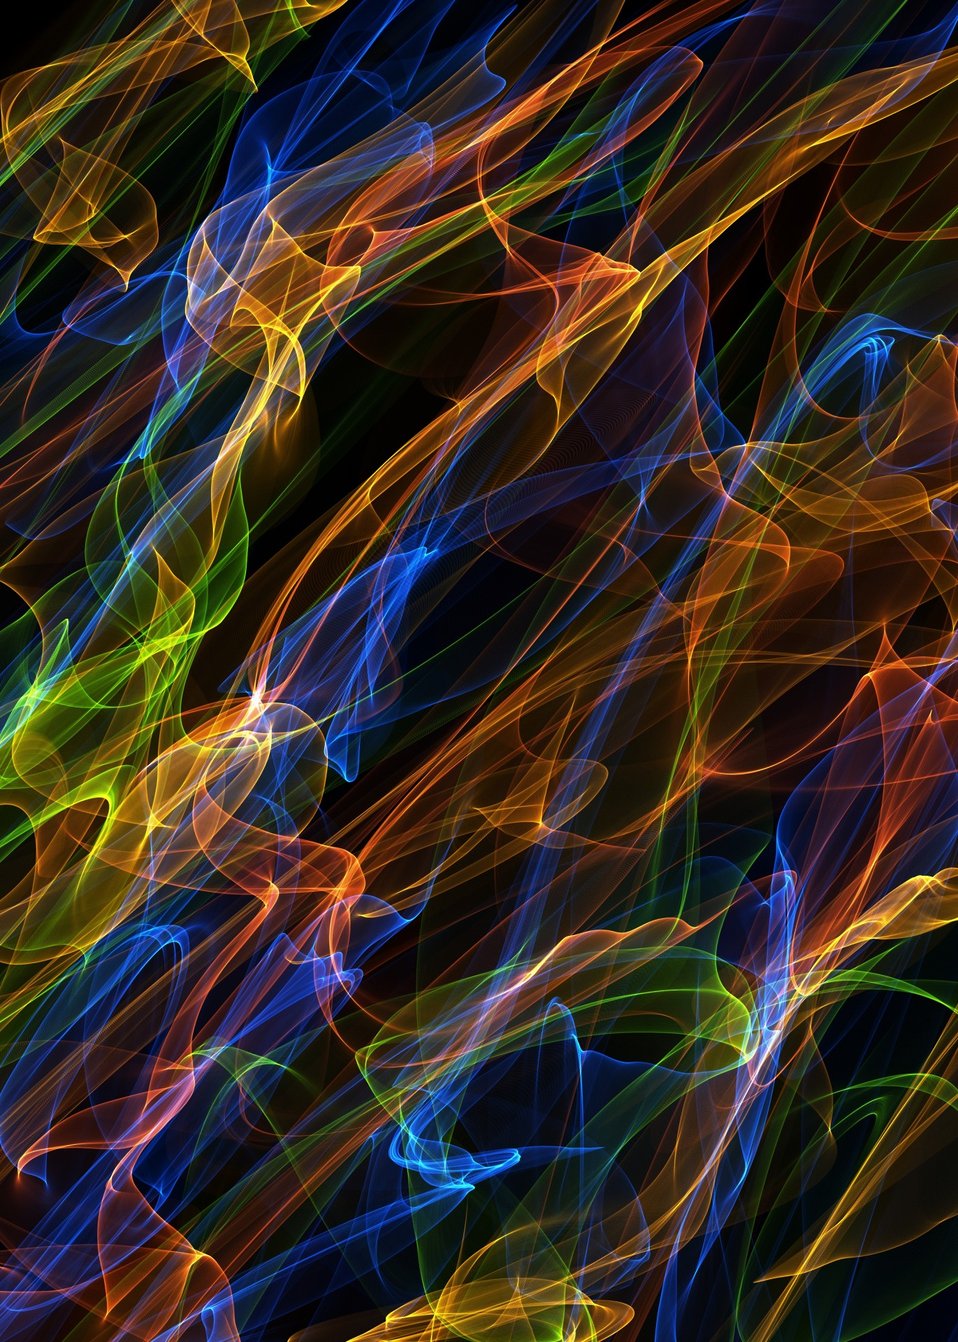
Rainbow flames

Red, green and blue flames of fire background illustration..